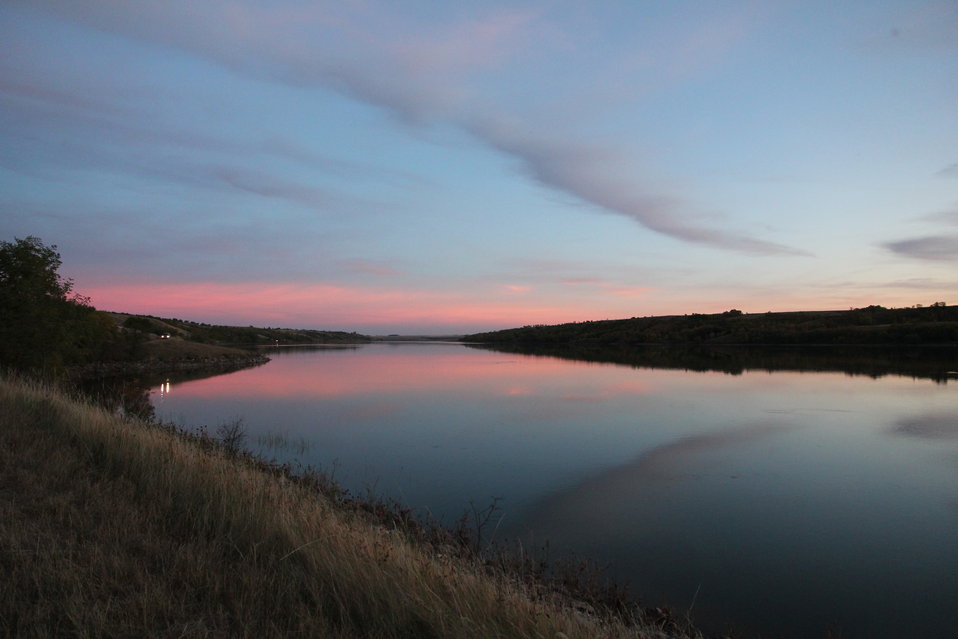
Sunset on Des Lacs Lake

For two weeks in Septemberr, while the leaves are blazing orange and red, Refuge staff open the Canada Goose Hiking Trail for public vehicle use.

The string of headlights on the trail are vehicles enjoying the beautiful sunset.